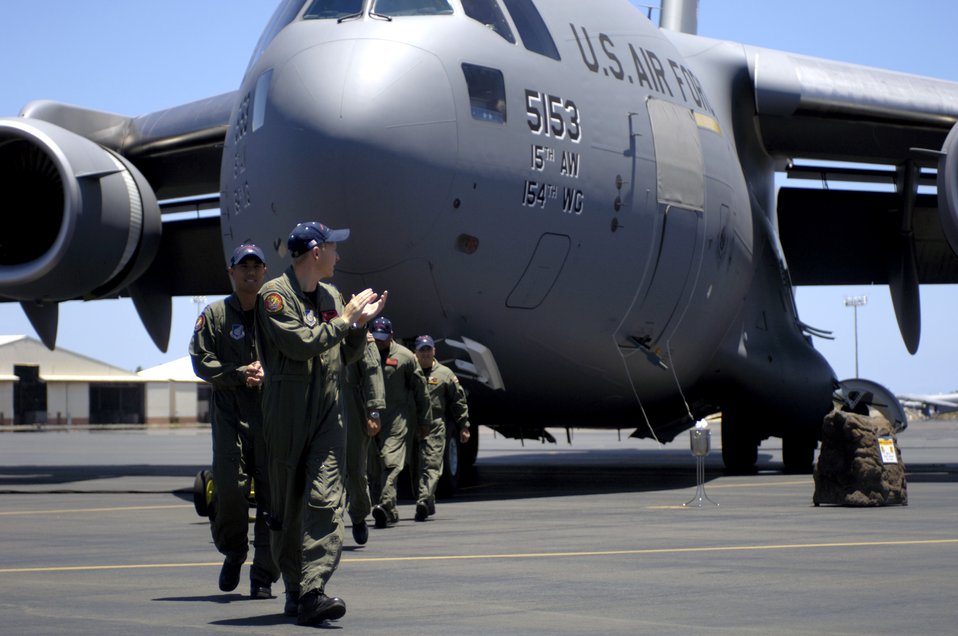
Hickam AFB welcomes its final C-17

Aircrew members walk away from a C-17 Globemaster III at Hickam Air Force Base, Hawaii, on July 18. The